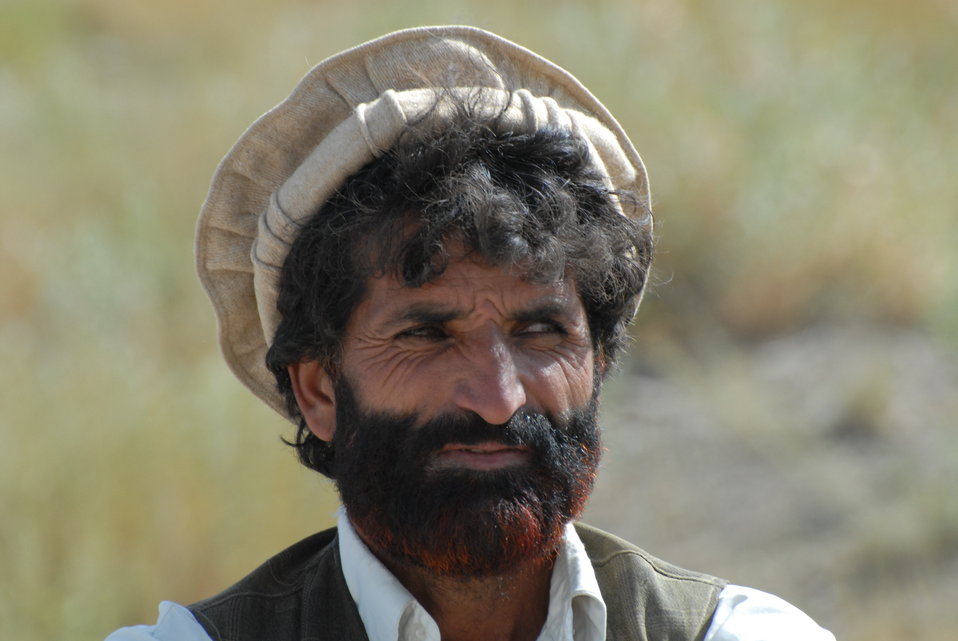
'On the Road' in Paktya Province